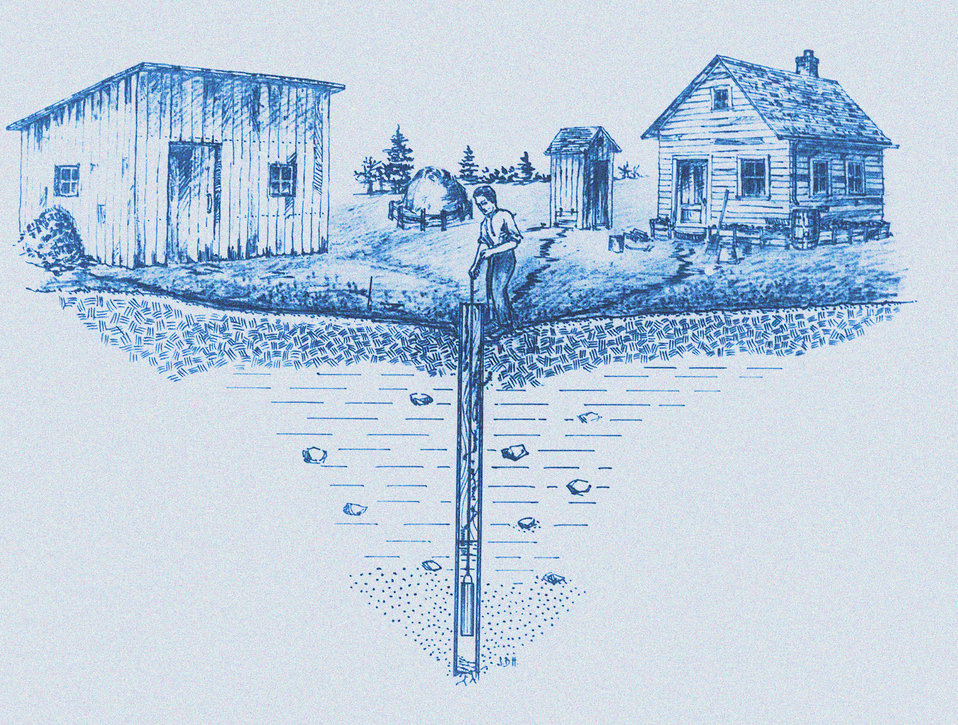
This historic diagram, which had been digitally enhanced and colorized, depicted an improperly located, and poorly constructed 'bored' type well, and showed how pollution from an improperly located privy that was placed higher on the sloping ground may contaminate the nearby potable water supply. Published in 1915, this was one of a series of instructional drawings used by the Minnesota Board of Health to train its state public health workers.